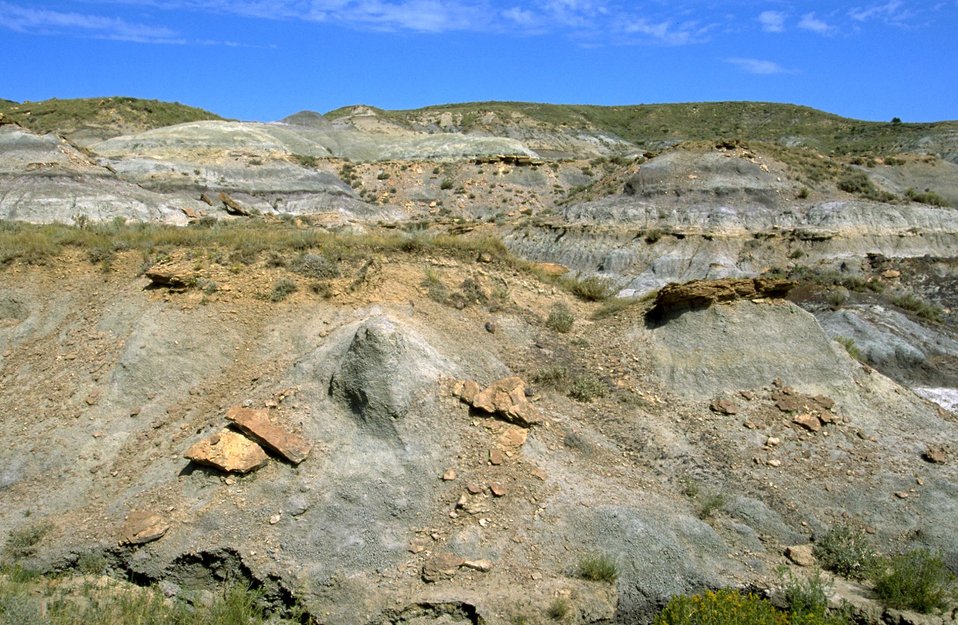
Archaeology site within existing oil field